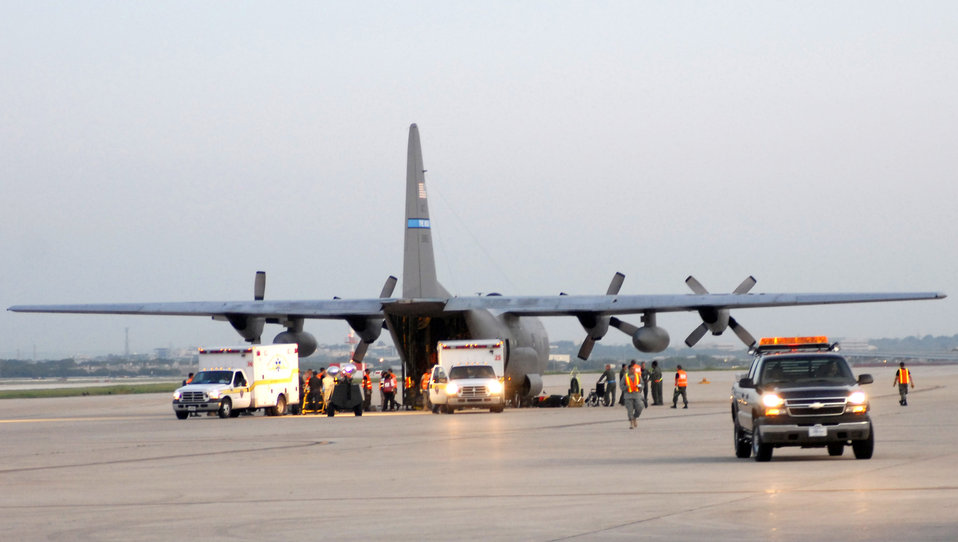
Airman evacuate patients from Beaumont

Airmen from the 37th Training Wing and 59th Medical Wing at Lackland Air Force Base in San Antonio unload hospital patients Sept. 12 evacuated from Beaumont, Texas. The patients were transported in C-130 Hercules aircraft by aircrews from Little Rock AFB and medical Airmen from the 908th Aeromedical Evacuation Squadron at Scott AFB, Ill., in preparation for Hurricane Ike's landfall in southern Texas.